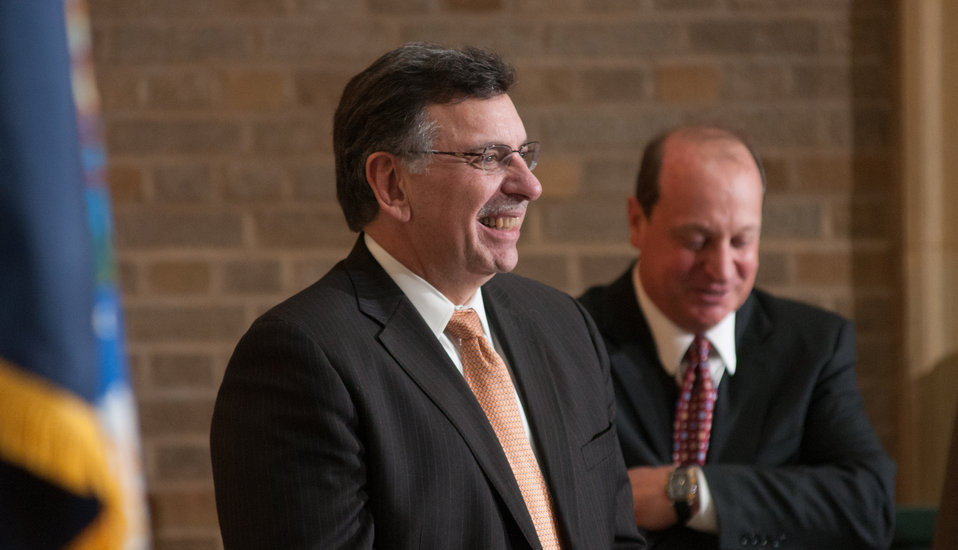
Dairy Management, Inc. (DMI) Chief Executive Officer Tom Gallagher listens to Agriculture Secretary Tom Vilsack at a luncheon at the Whitten Building Patio, in Washington, D.C. on Tuesday, Feb. 26, 2013. Mr. Gallagher presented Secretary Vilsack and the U.S. Department of Agriculture (USDA) team with a National Football League Fuel Up to Play 60 helmet for the work that USDA has done in support of the dairy industry.